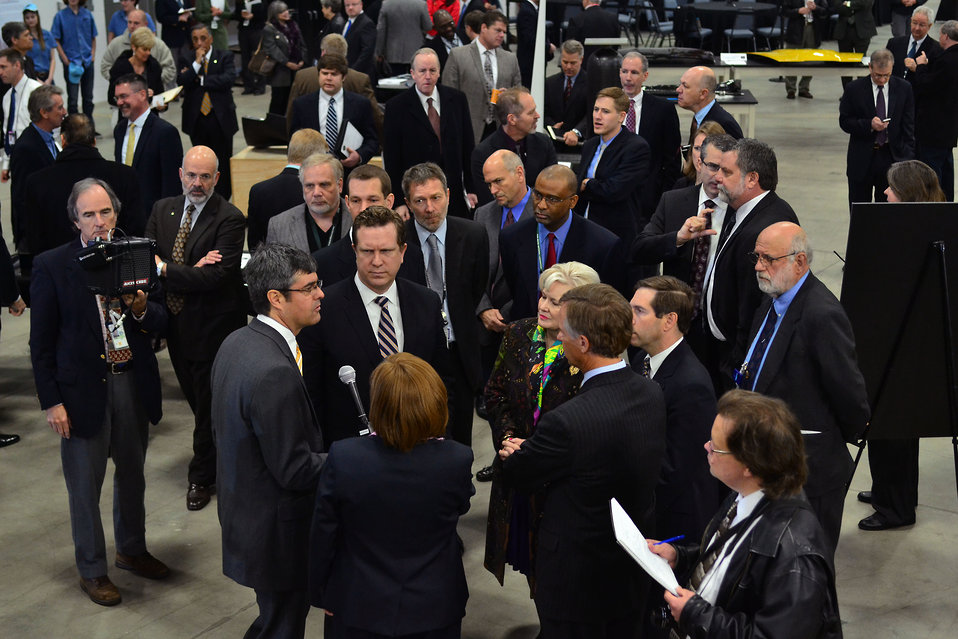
Carbon Fiber Technology Facilty Open House Oak Ridge Tennessee

13-025 DOE photo Lynn Freeny